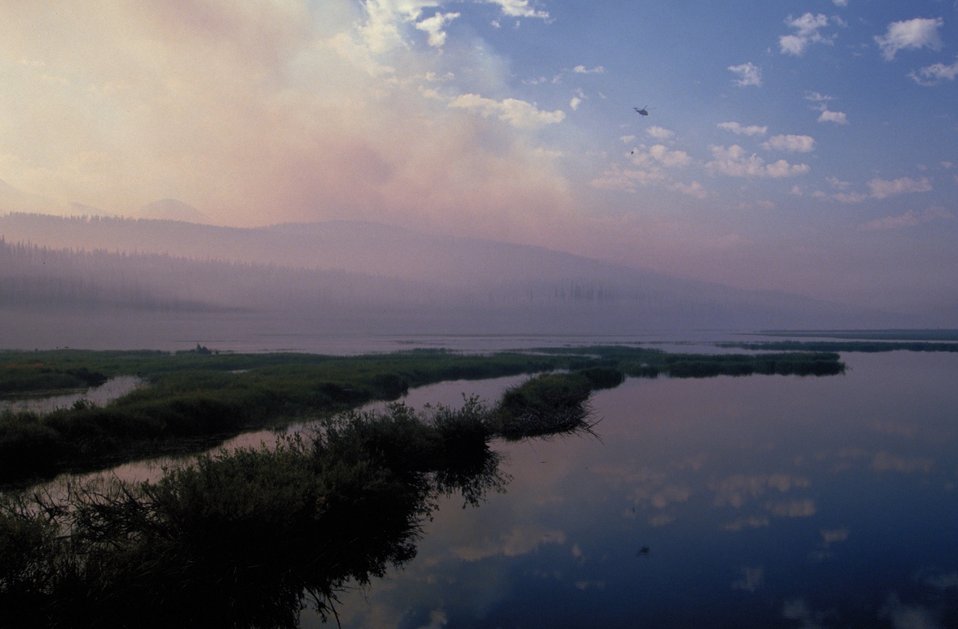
Helicopter fill-up area Fire Season 2000 Lower Snake River District LSRD